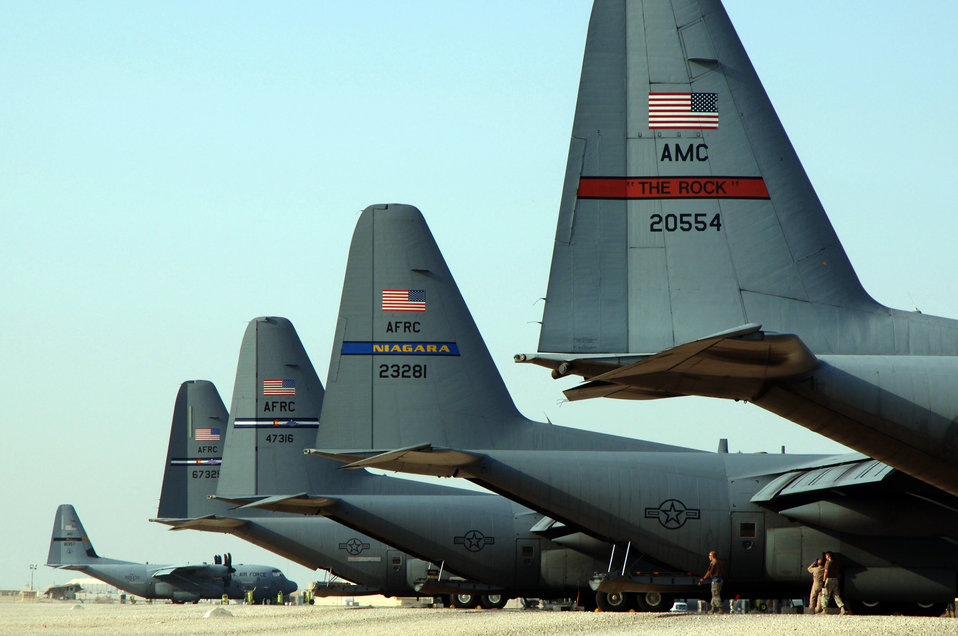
Deployed Hercules

SOUTHWEST ASIA (AFPN) -- C-130 Hercules from various Air Force units sit on the flightline at a deployed location Feb. 5.